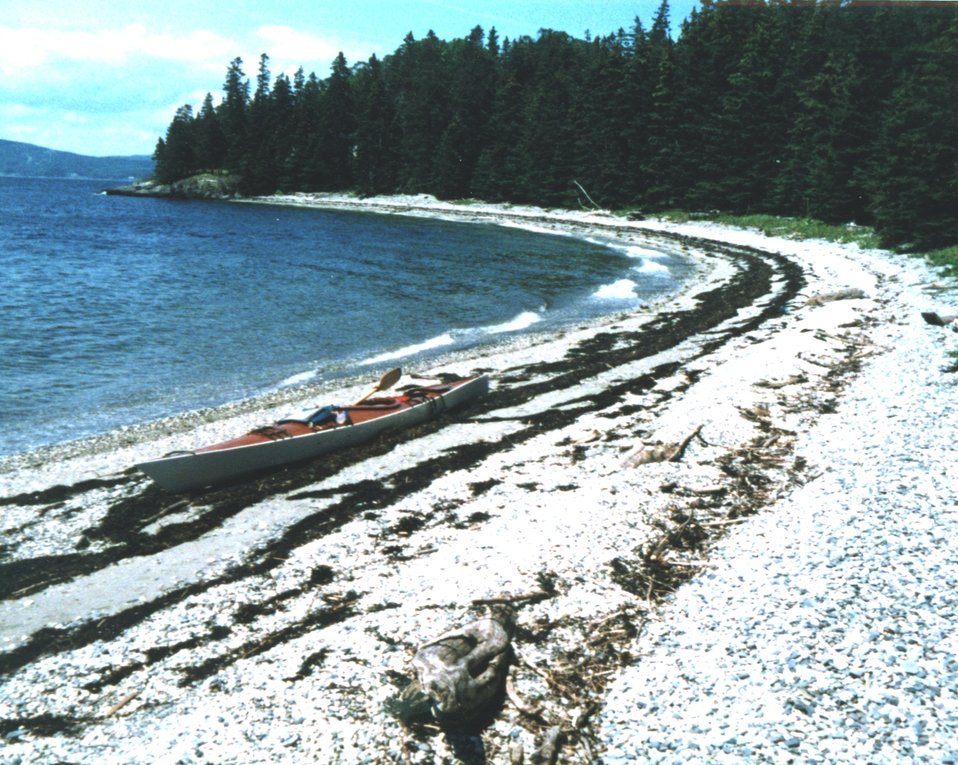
Pebble Beach on 700 Acre Island. This beach has been formed from glacial material while the Philbrook Cove Beach, right around the corner, was formed from erosion of slate.